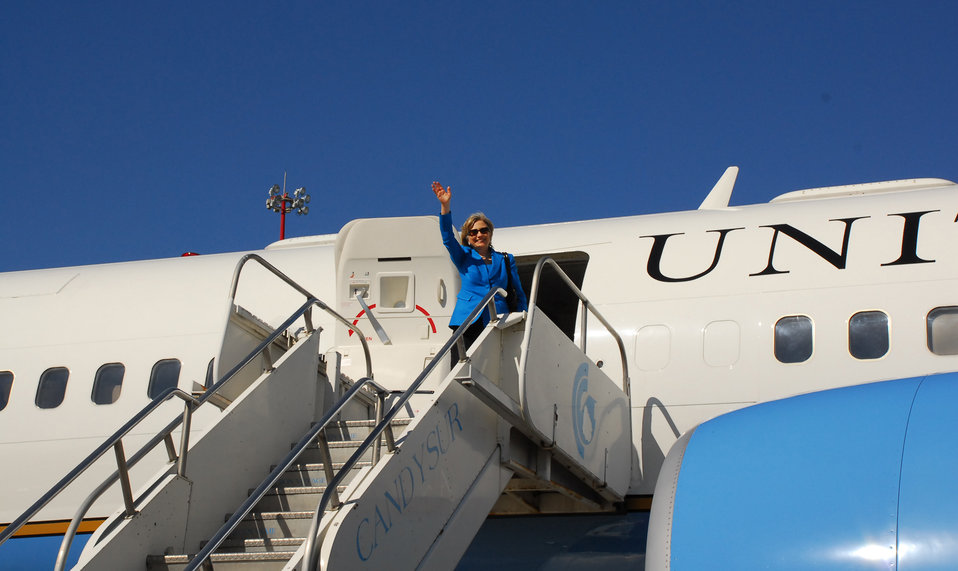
Secretary Clinton Visits Uruguay

U.S. Secretary of State Hillary Rodham Clinton waves goodbye before lifting off from Montevideo, Uruguay en route to Buenos Aires, Argentina March 1, 2010.